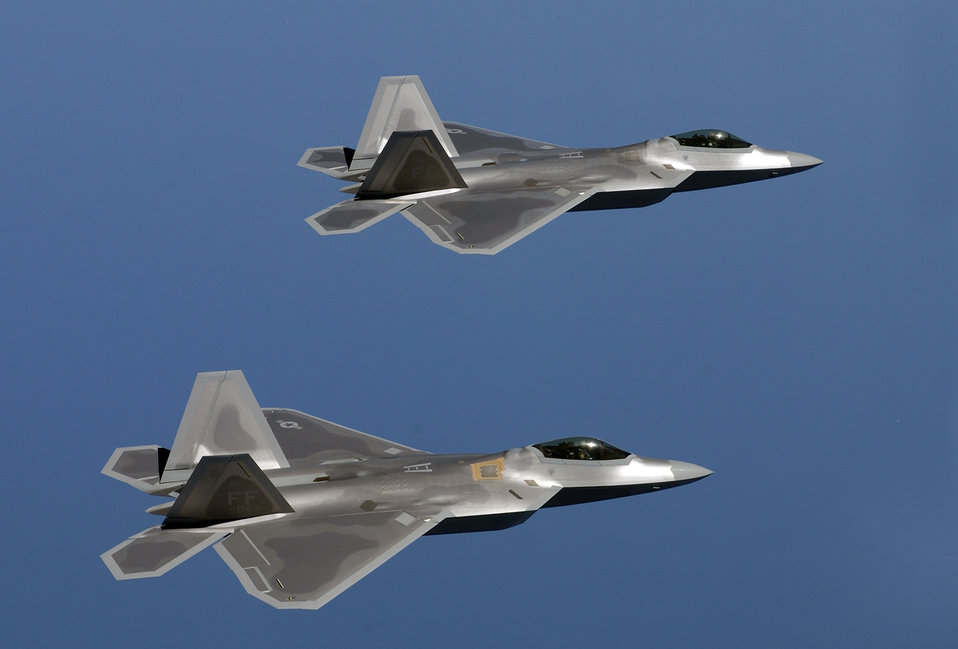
F-22 scheduled for first overseas deployment

F-22 Raptors fly over Langley Air Force Base, Va. A squadron of F-22 Raptors is scheduled to deploy to Kadena Air Base, Japan, as part of U.S. Pacific Command's Theater Security Package in the Western Pacific in early 2007. This will be the first overseas deployment for the Air Force's newest fighter.